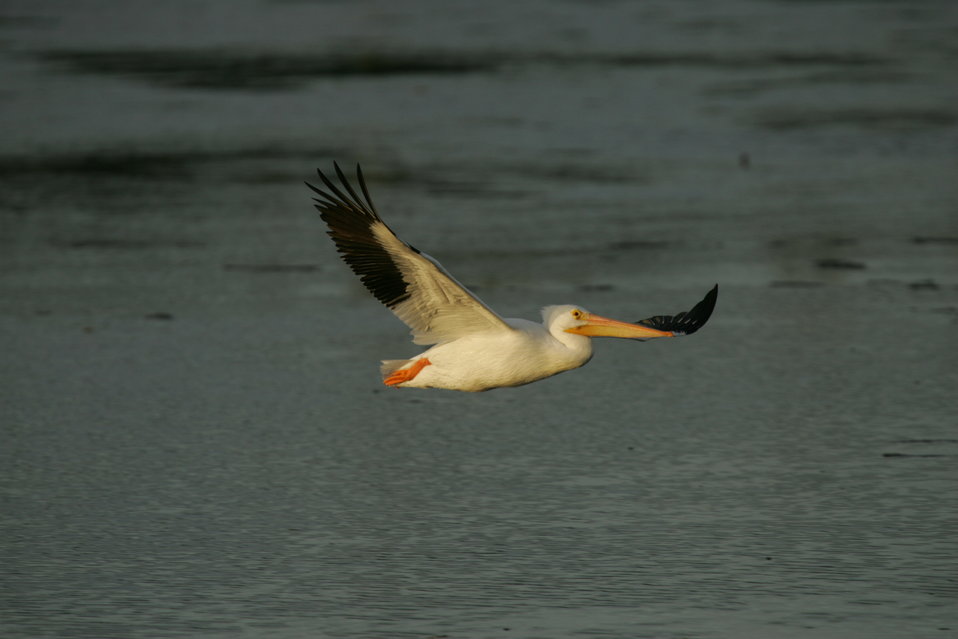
White Pelican, J.N. 'Ding' Darling NWR